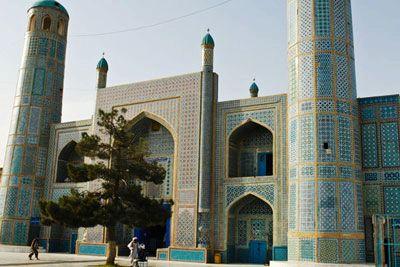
The Blue Mosque Is Shown

A photo is taken of the Blue Mosque in Mazar-e-Sharif, Afghanistan, on October 11, 2010. Assistant Secretary Schwartz then traveled to Afghanistan from October 10-12, 2010. He began with a visit to a rural village comprised primarily of returnees, where U.S. funds have supported a healthcare facility that will now be run by the Afghan Ministry of Public Health. In Mazar-e-Sharif, he visited a government-provided land allocation site for returnees, as well as a center for Afghan women returnees focused on literacy training, heath education, rights awareness and cultural studies. In Kabul, he toured the Orthopedic Hospital run by the International Committee for the Red Cross.